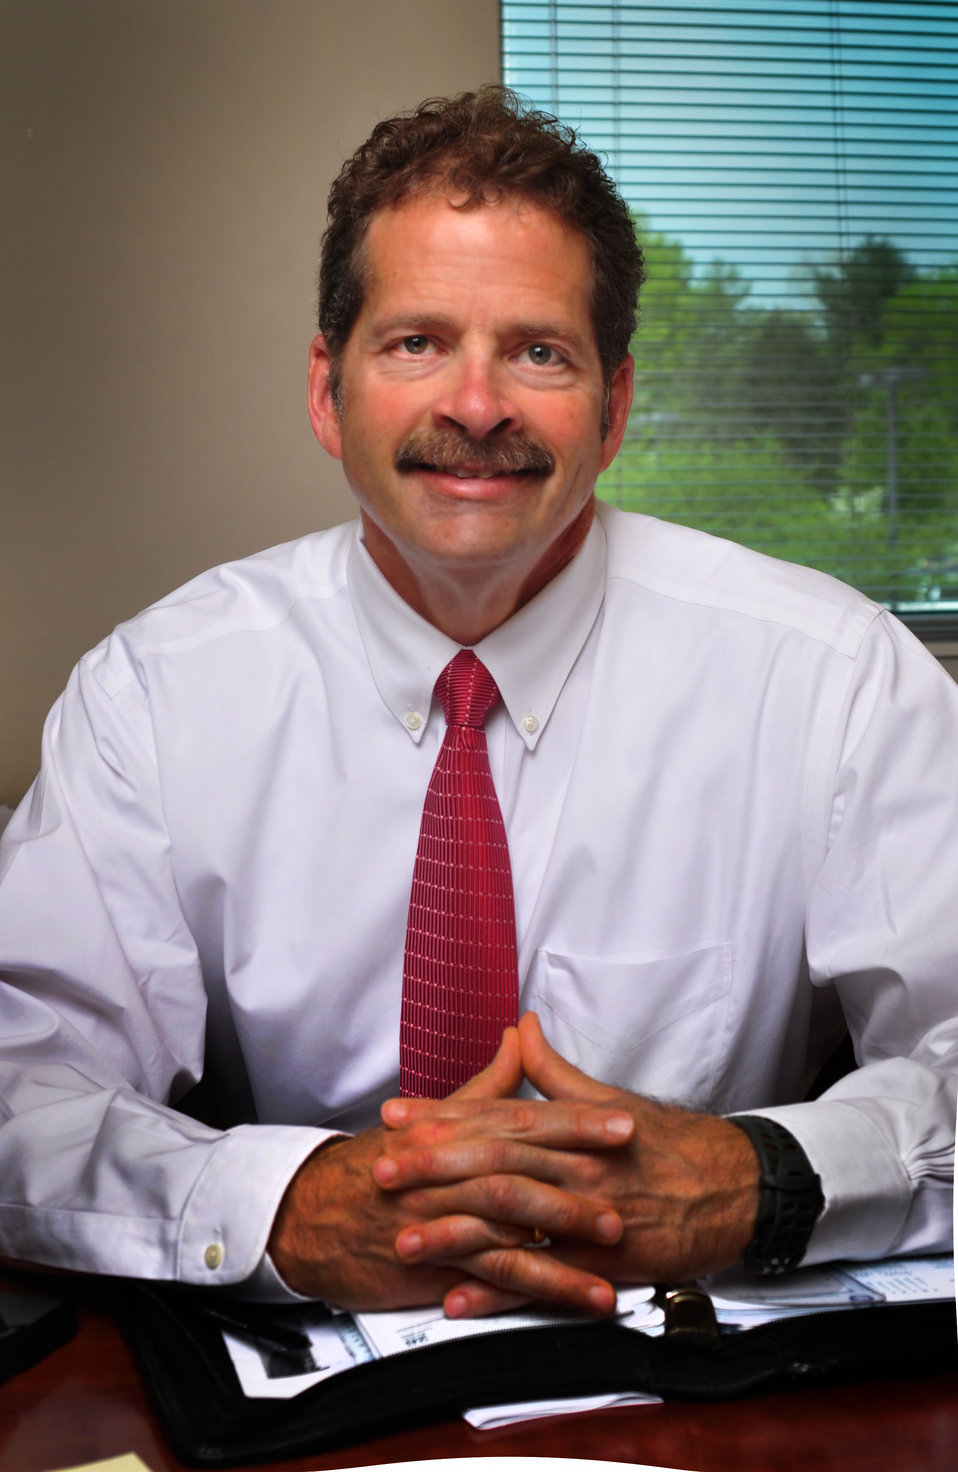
Kevin Hall Deputy Manager DOE Oak Ridge Office

13-042 DOE photo Lynn Freeny 4-26-2013 Oak Ridge Tennessee